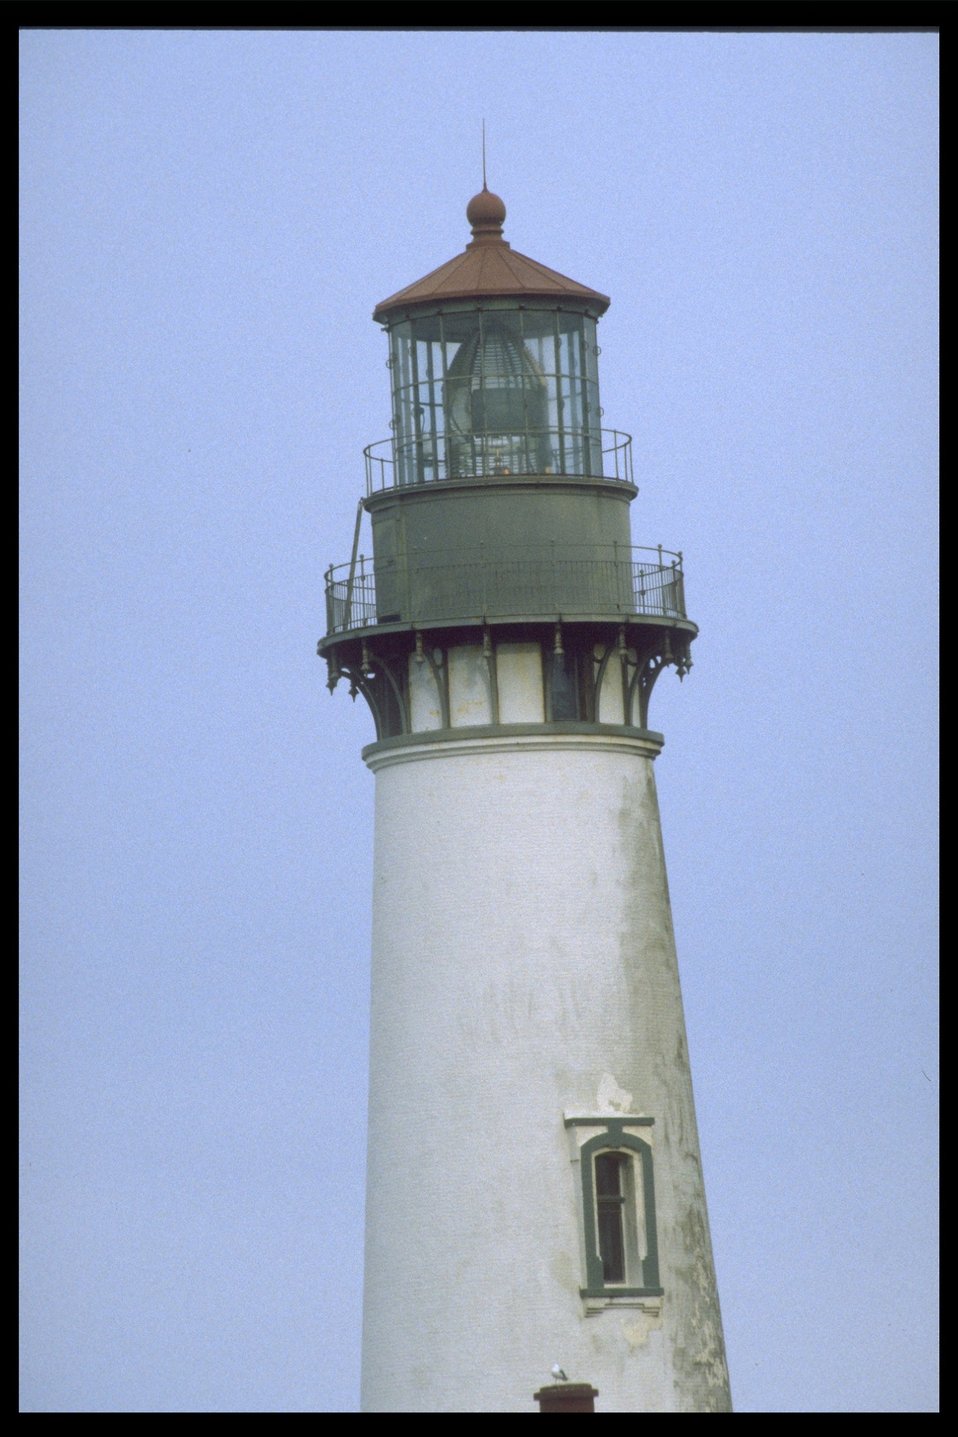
Yaquina Head Lighthouse.